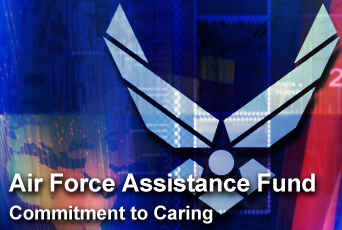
Air Force Assistance Fund campaign begins Feb. 12

The Air Force Assistance Fund campaign runs from Feb. 12 to May 4. This year's